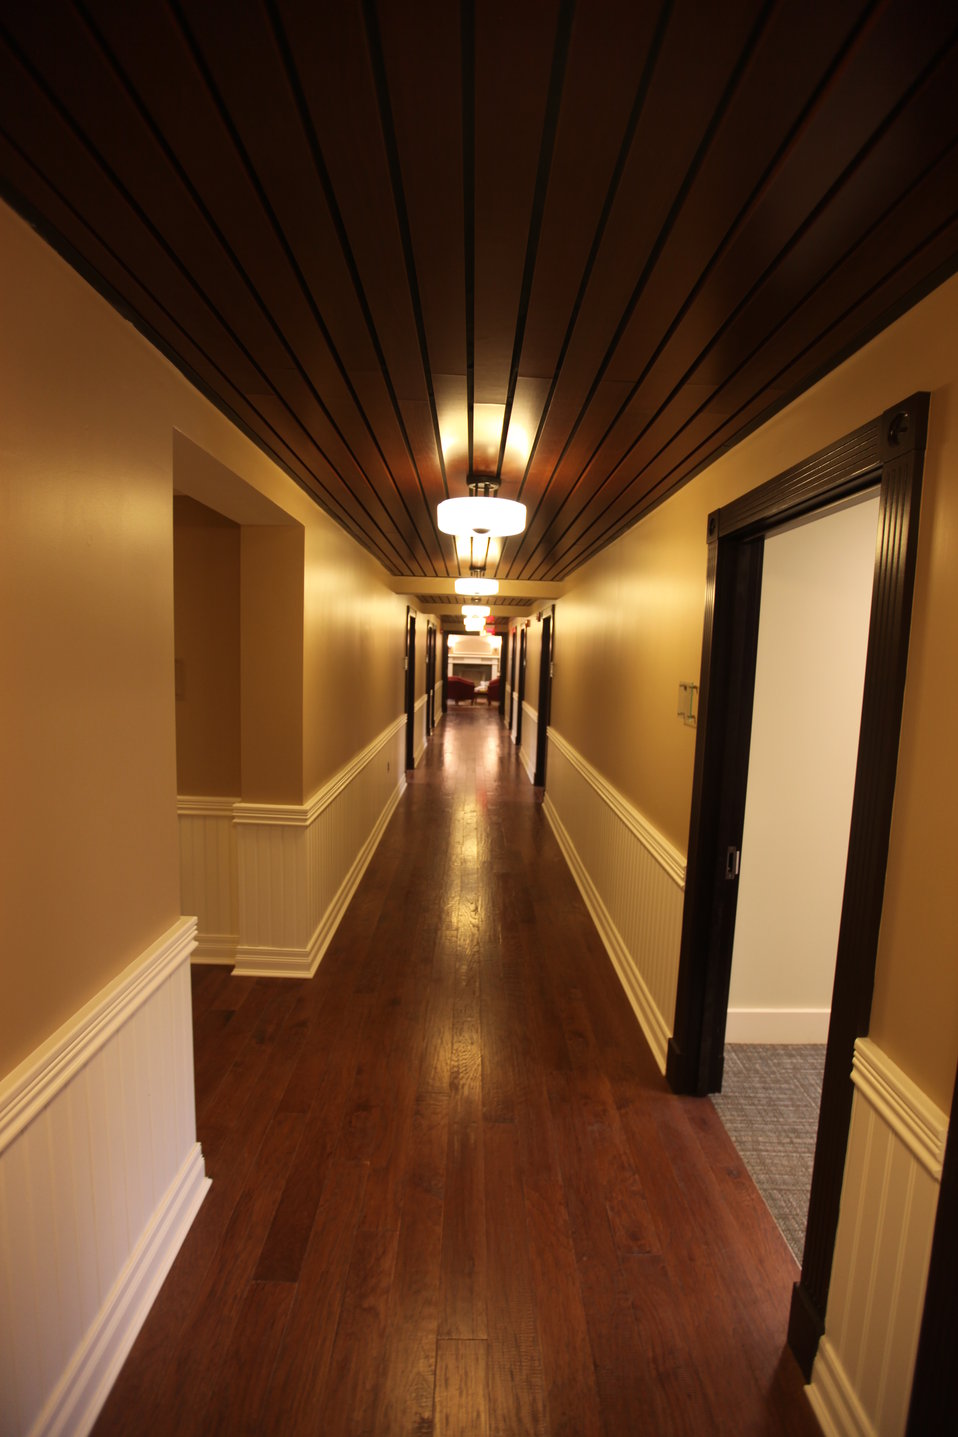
Hallway

A pic of a hallway to show the quality of the design and construction of this building (done by local contractors!).